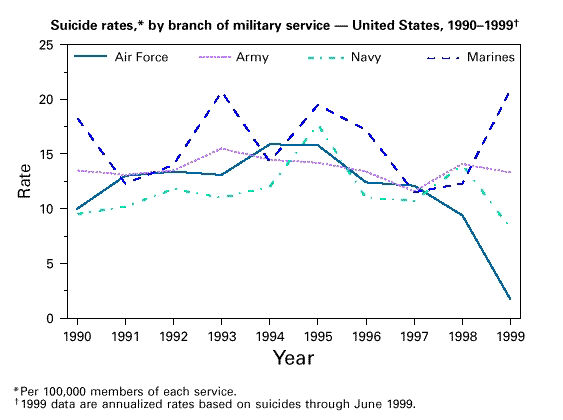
Suicide rates by branch of military service--United States, 1990-1999.